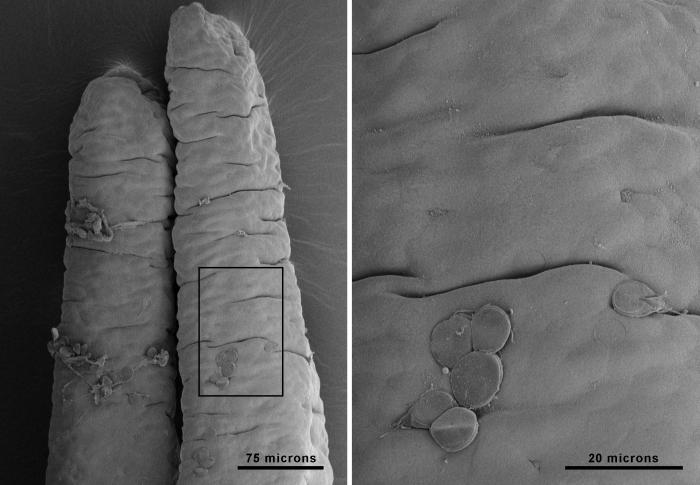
These scanning electron micrographs (SEM) revealed the mucosal surface of a rat small intestinal villi, which had become infested with Giardia muris. Note the clusters of trophozoites on the intestinal surface, and one such cluster seen under a higher magnification on the right.